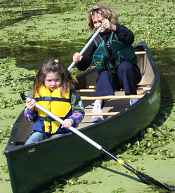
Stone Lakes National Wildlife Refuge